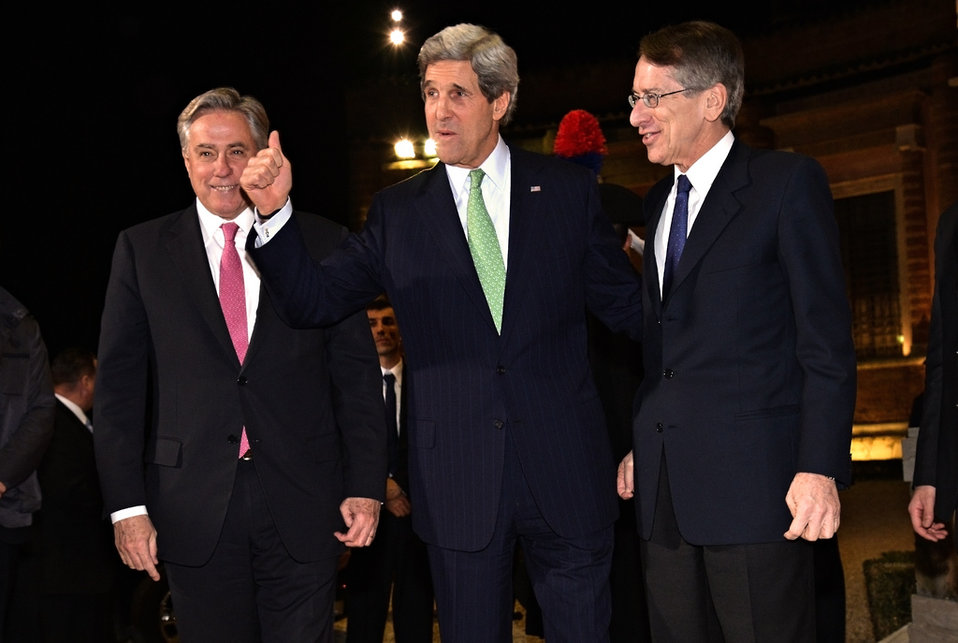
Secretary Kerry and Ambassador Thorne Meet With Italian Foreign Minister Terzi

U.S. Secretary of State John Kerry and U.S. Ambassador to Italy David Thorne, left, meet Italian Foreign Minister Giulio Terzi, right, at a gathering in Rome, Italy, on February 27, 2013.